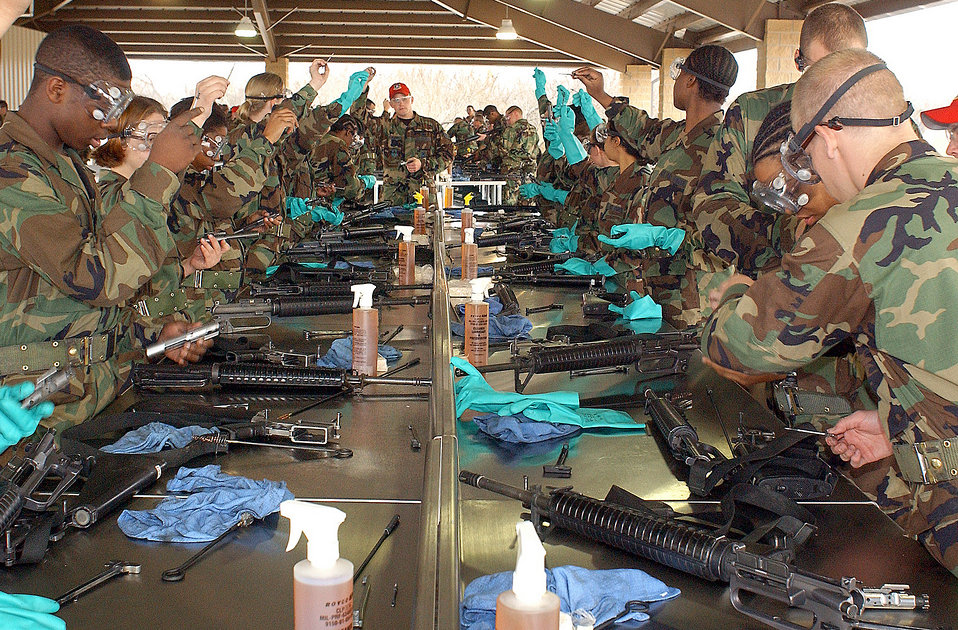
Clean it up

LACKLAND AIR FORCE BASE, Texas (AFPN) -- Basic trainees disassemble and clean M-16s recently at the newly opened weapons cleaning pavilion here.